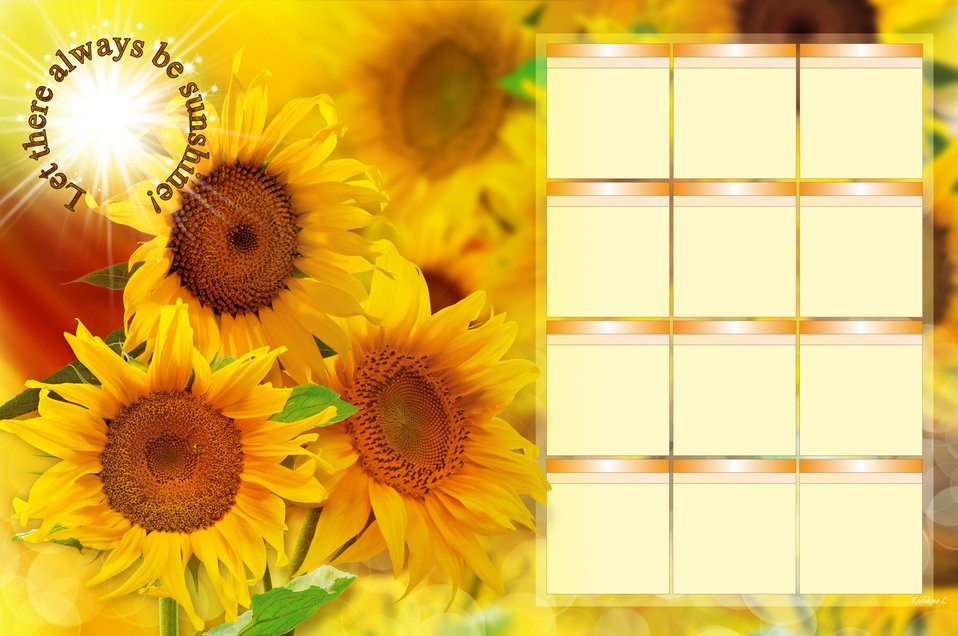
Calendar with sunflowers

You can insert any calendar information for any year this background.